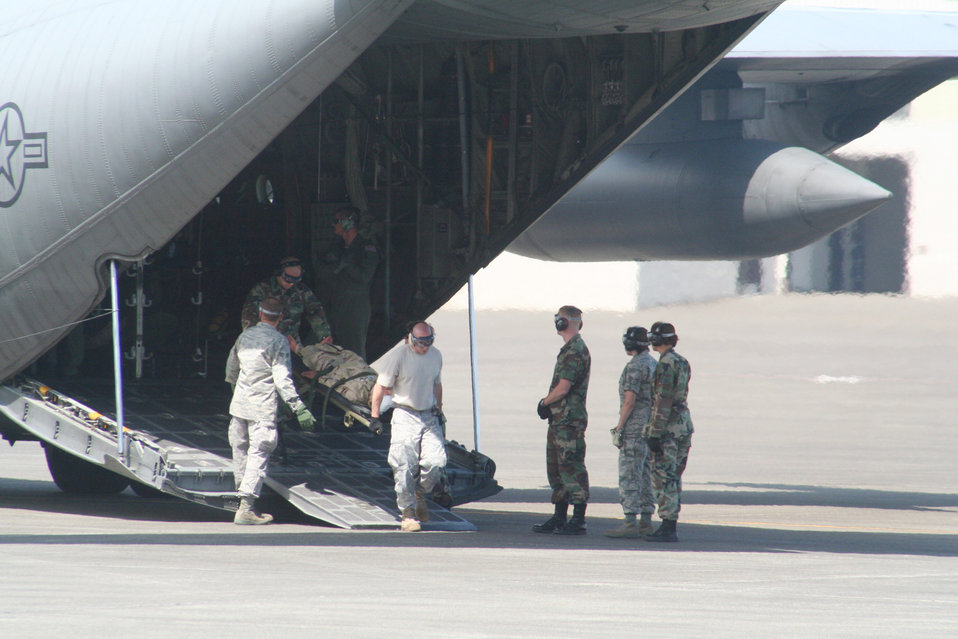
Guard members bring unique skills to war effort

Teams compete in the aeromedical evacuation events for Air Mobility Rodeo 2009 July 20 at McChord Air Force Base, Wash. More than 100 teams are participating in RODEO competition, including teams from seven foreign countries. RODEO is the Air Force's and AMC's premier air mobility competition. It's an international combat skills and flying operations competition designed to develop and improve techniques, procedures and interoperability with international partners to optimize mobility partnerships and enhance mobility operations.